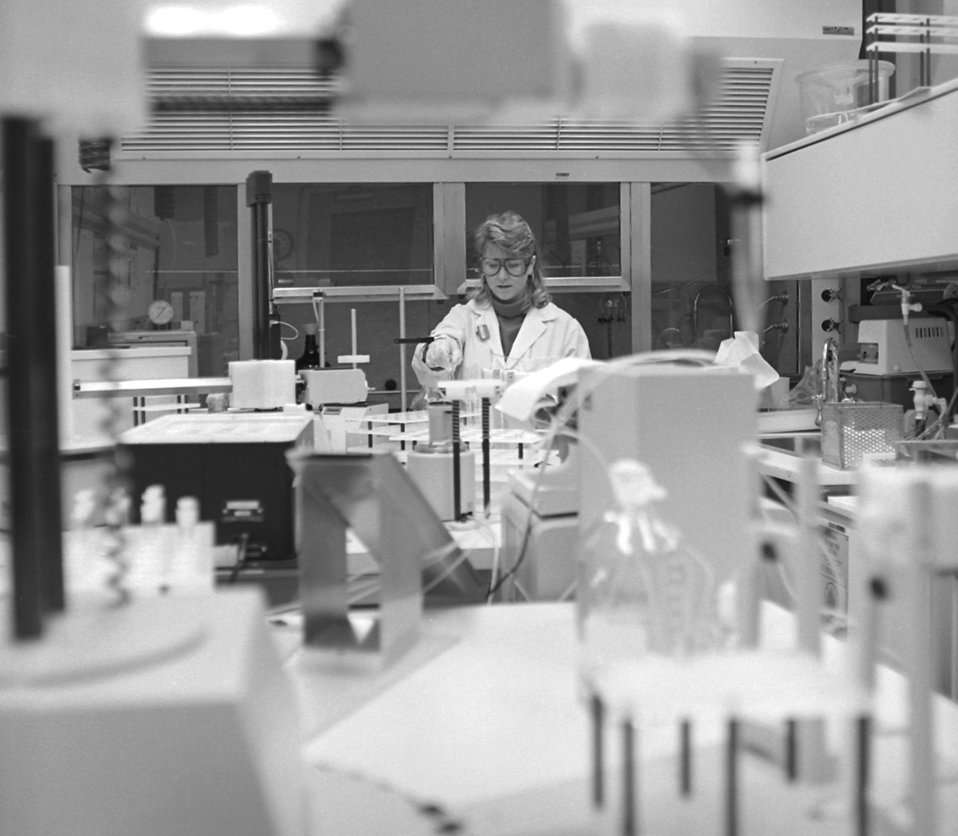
CDC lab technician, Dana Shealy, is conducting a lab experiment in the toxicology robotics lab.